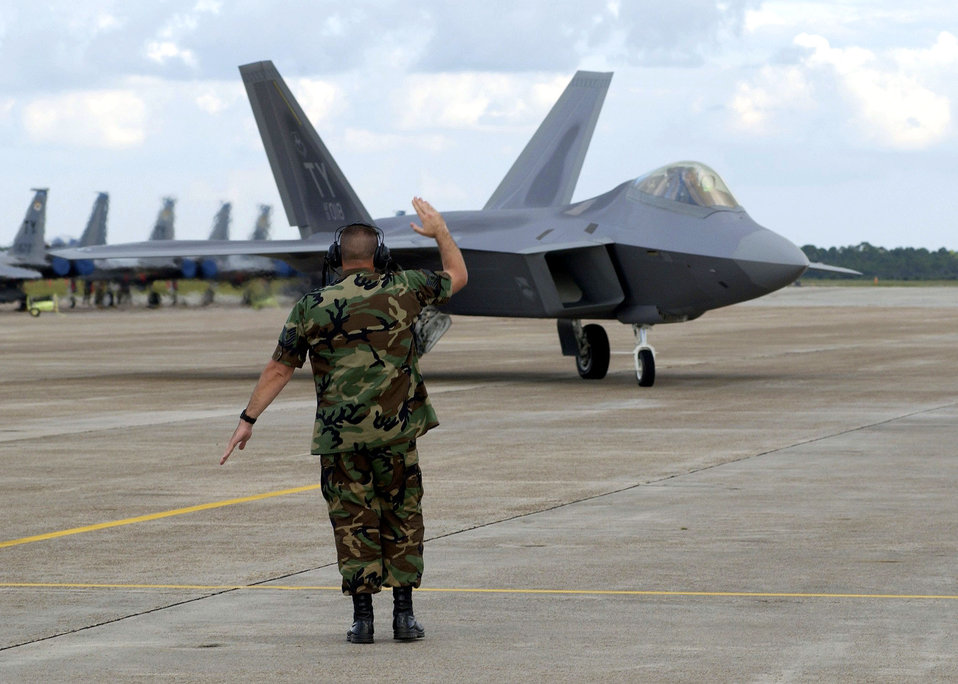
VIP parking

TYNDALL AIR FORCE BASE, Fla. -- Tech. Sgt. Jeff Simpson guides Raptor number 18 to its parking spot. Raptor 18 is the first operational F/A-22 Raptor delivered to the Air Force’s F/A-22 schoolhouse here. The Raptor will eventually replace the F-15 Eagle and sets the foundation for the next generation of combat-fighter pilots.